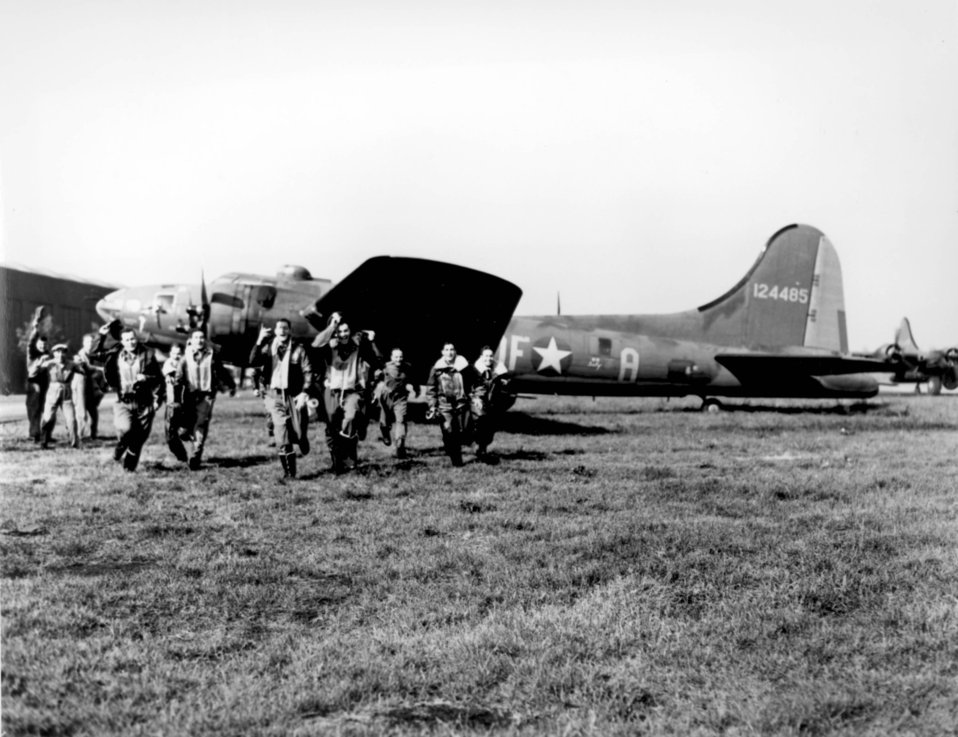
Memphis Belle

1940s -- The crew of the B-17